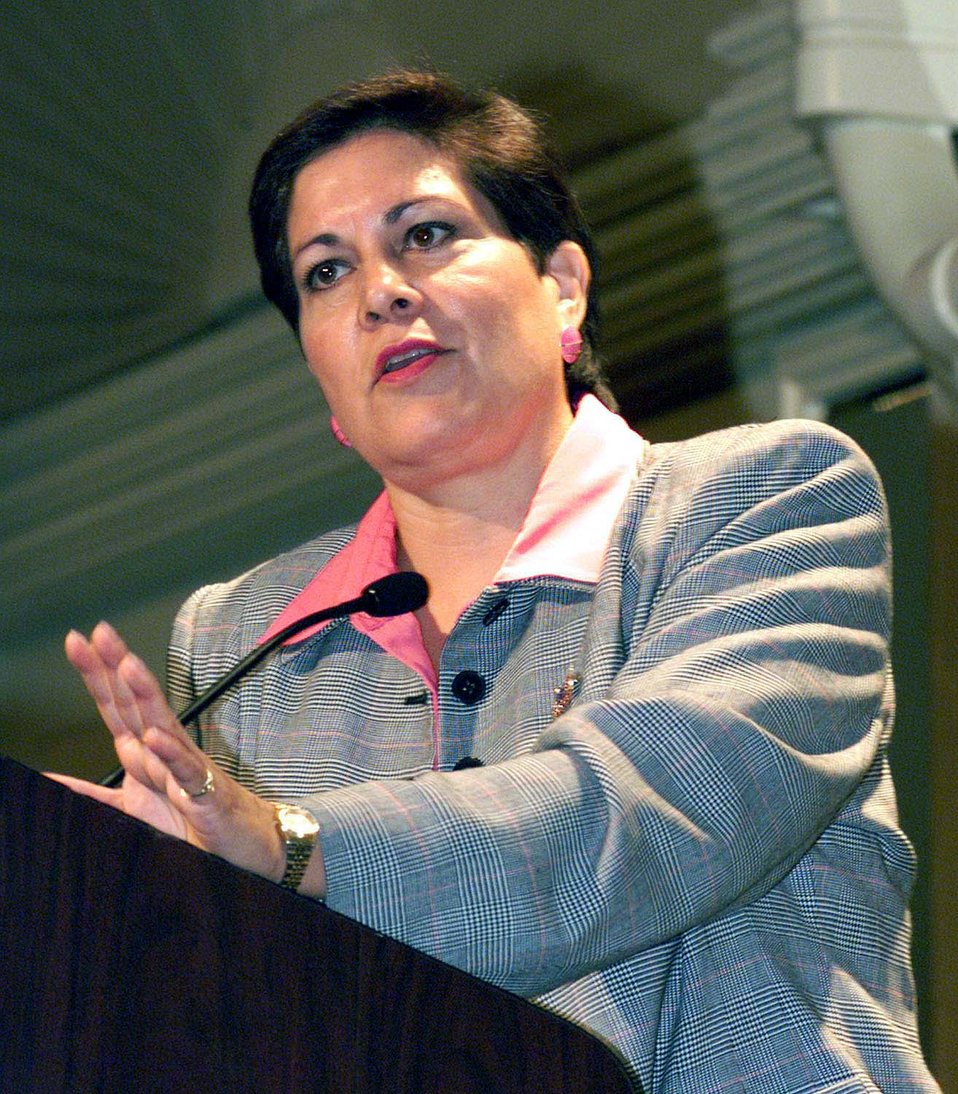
First Hispanic woman grad credits academy for her success

WASHINGTON -- Linda Garcia Cubero, the first Hispanic woman graduate of a service academy, said the Air Force Academy had a tremendous effect on her career and her success in the Air Force and in the corporate environment.